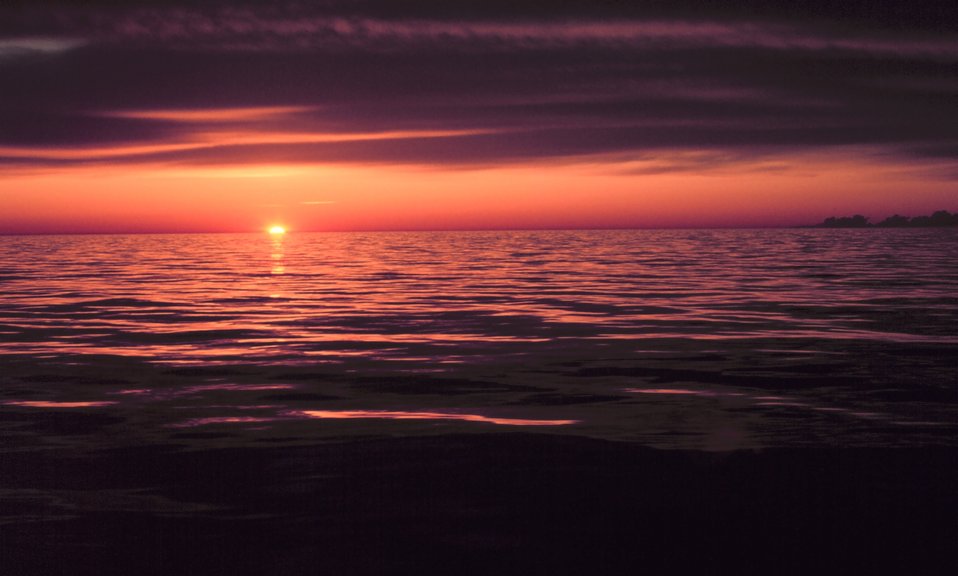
A magnificent sunset framed by clouds above and ocean below.